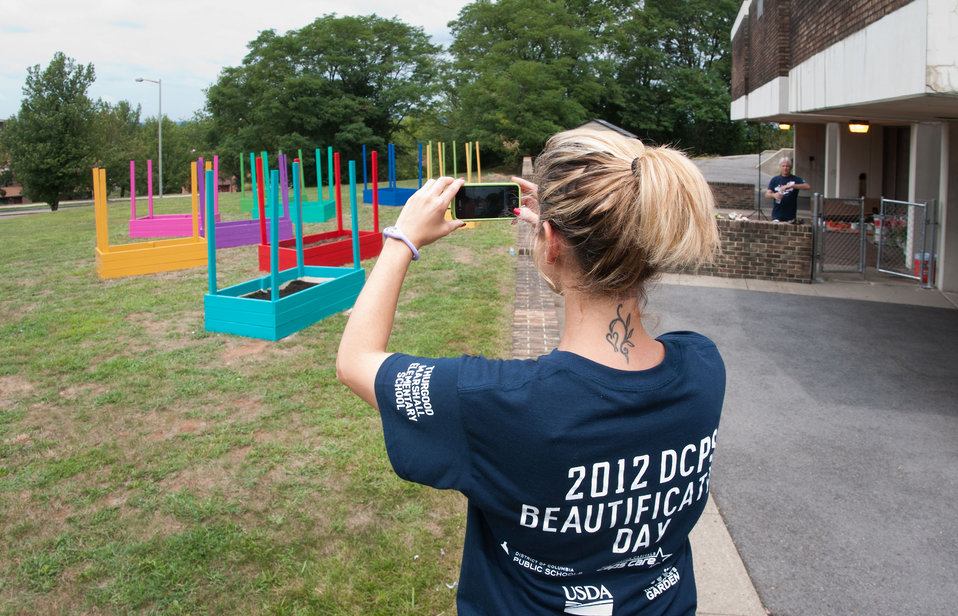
U.S. Department of Agriculture (USDA) People’s Garden Executive Master Gardeners, friends, and family, along with Washington Capitals fans are volunteering in District of Columbia Public Schools’ (DCPS) Beautification Day, on Saturday, August 25, 2012, at Thurgood Marshall Elementary School, in Washington, D.C. Each year people are invited to help “spruce up” public school facilities in preparation for the first day of school. More than 70 volunteers pitched in at this large school facility. The People’s Garden effort involves building and painting raised planter boxes, then preparing the soil mixture so they are “ready to grow.” Additionally, a team that includes descendants of U.S. Supreme Court Justice Thurgood Marshall assembles a prefabricated garden toolshed. The Justice’s son, John Marshall leads the team, which includes Brianna the Justice’s great-grand daughter in one of many multi-generational efforts at this school today. Washington Capitals Forward Mike Riberio, his family and mascot Slapshot participated in every project underway at Marshall School. From the outside gardens, to inside mural painting, and robotics worktable construction, the teams made their goals.